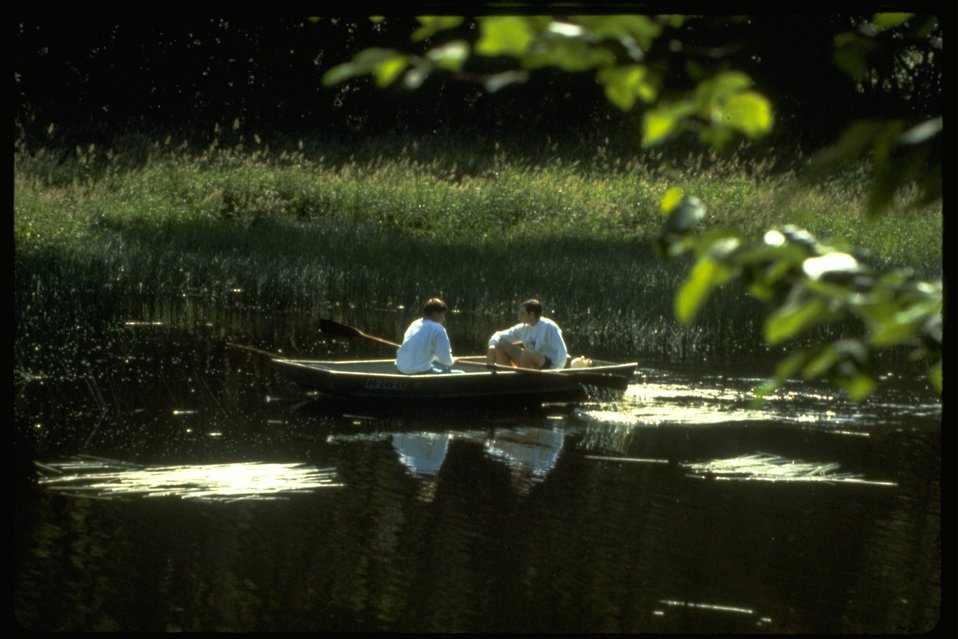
Two people fishing from a boat in a lake.